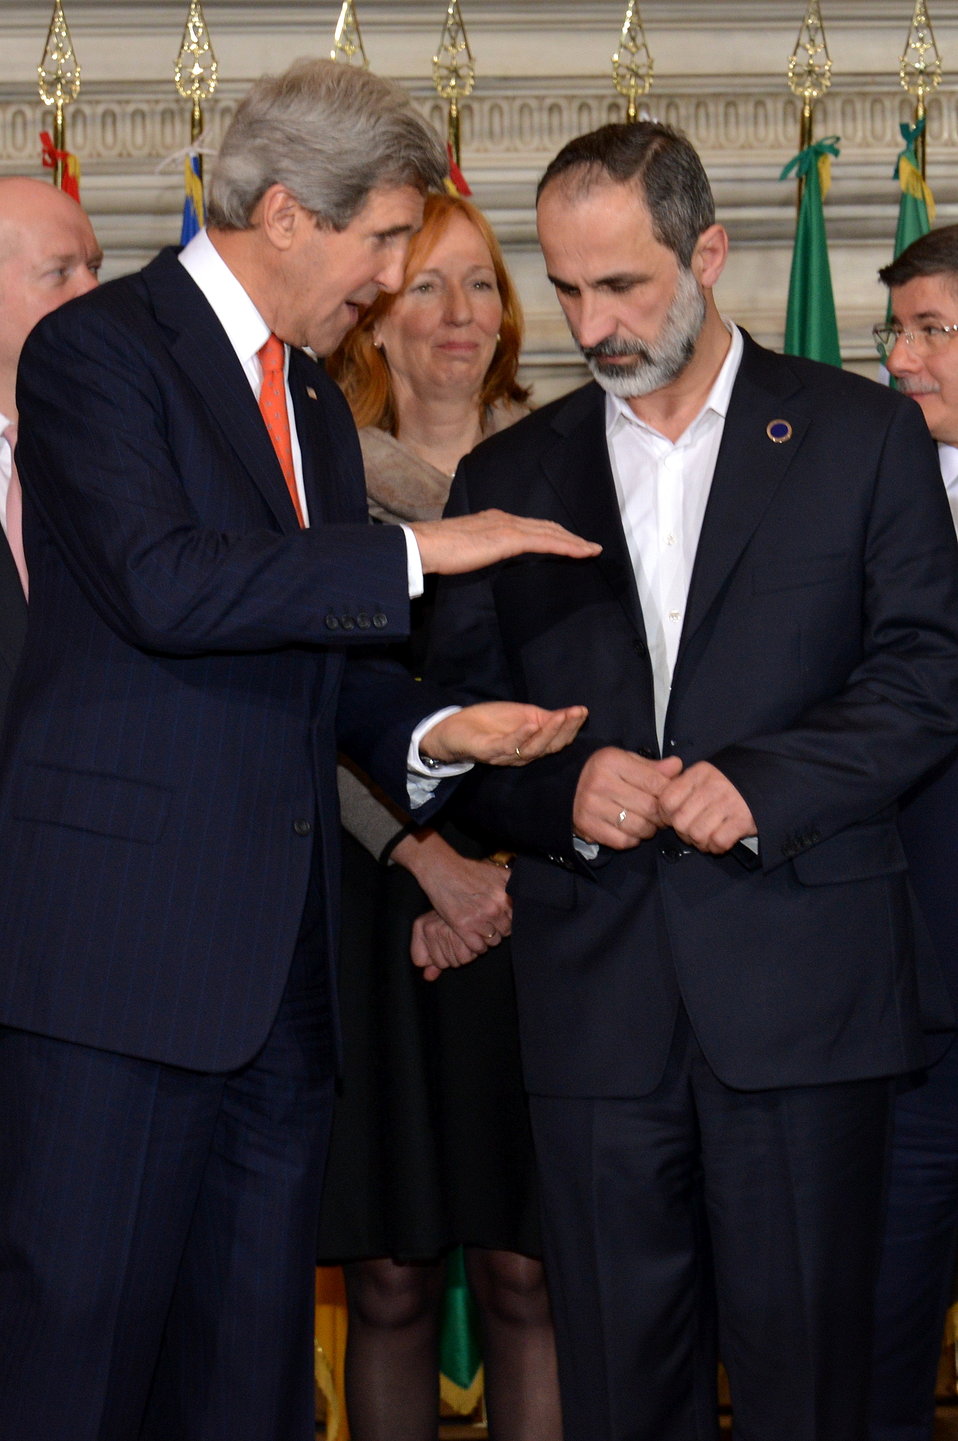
Secretary Kerry Speaks With Syrian Opposition Leader al-Khatib

U.S. Secretary of State John Kerry speaks with Syrian Opposition Leader Mouaz al-Khatib before taking a family photo with delegates for an Ad Hoc Meeting on Syria in Rome, on February 28, 2013.